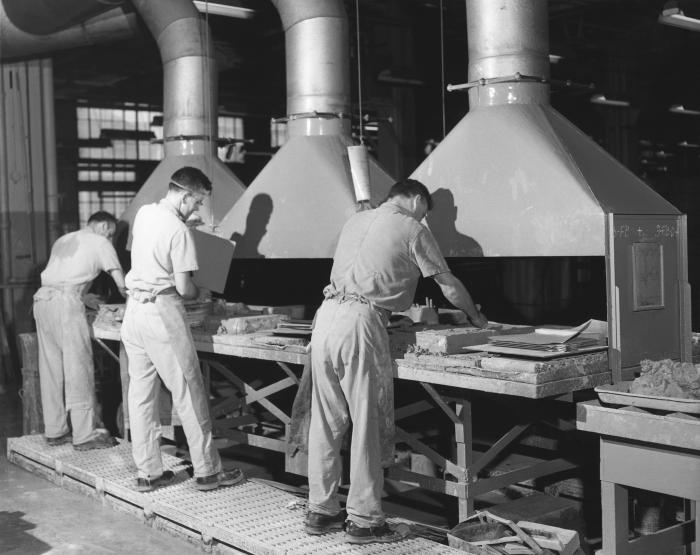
The three industrial workers depicted in this historic image, were working under ventilated hoods as lead pasters, in the battery manufacturing sector of the Crown Cork Company in Baltimore, Maryland. This photograph was provided by the Center for Disease Control's (CDC), National Institute for Occupational Safety and Health (NIOSH). Though the workers' immediate environment seemed to be well-ventilated, they looked to be unprotected in other areas including skin, and eye exposure to lead contaminates, which is now known to be the cause of heavy-metal neurotoxicity.